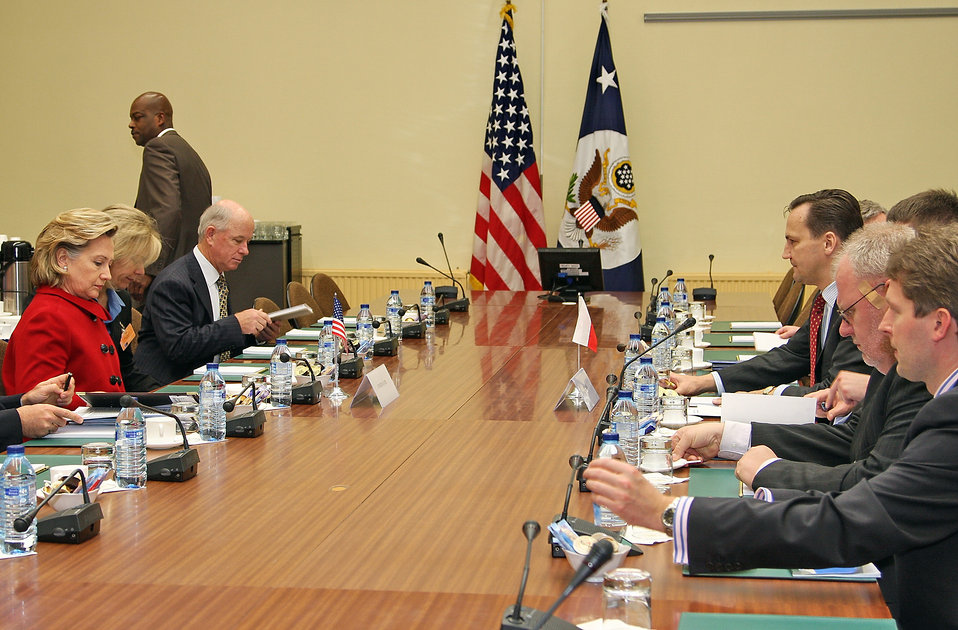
Secretary Clinton Meets With Polish Foreign Minister

U.S. Secretary of State Hillary Rodham Clinton holds a bilateral meeting with Polish Foreign Minster Radoslaw Sikorski in Brussels, Belgium December 4, 2009.